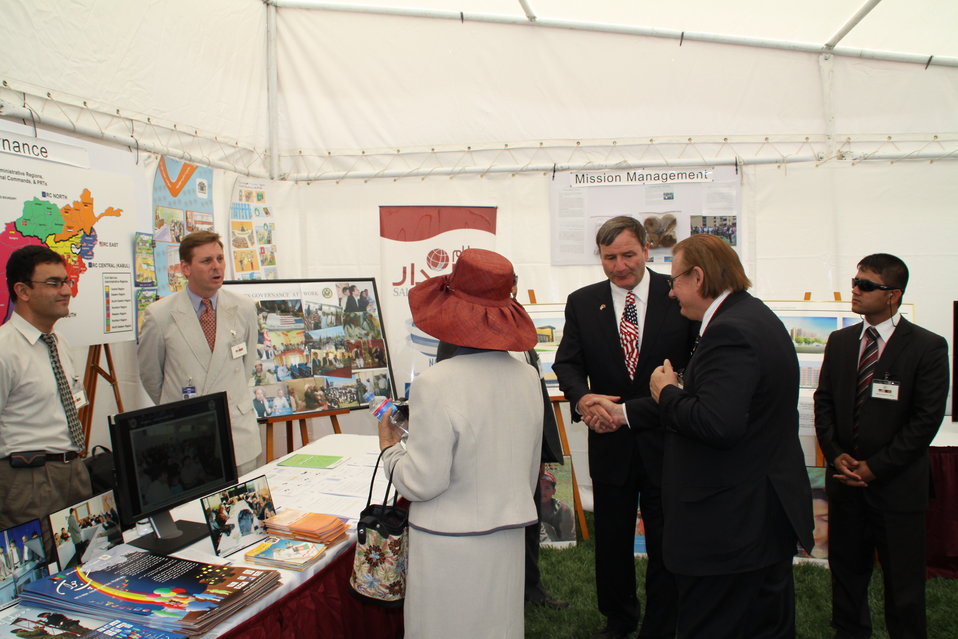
Kabul Official July 4th Celebration